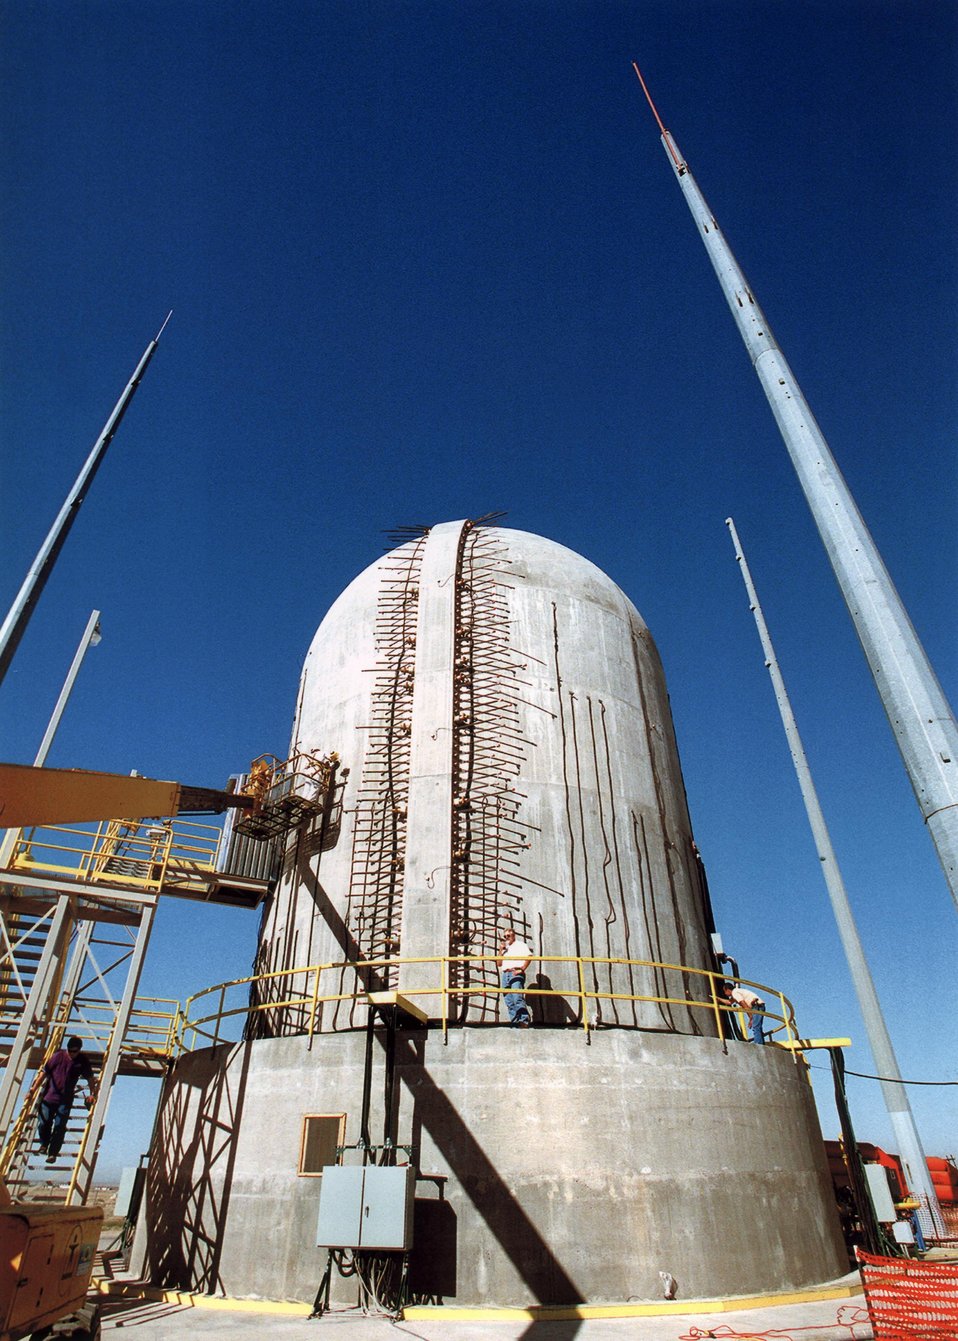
SCALE MODEL OF NUCLEAR REACTOR CONTAINMENT VESSEL BUILT FOR TESTING.

A PRESTRESSED CONCRETE CONTAINMENT VESSEL, 1/4 SCALE MODEL OF A VESSEL AT A NUCLEAR POWER PLANT IN JAPAN, WAS BUILT AT SANDIA TO BE TESTED TO FAILURE. ON 9/26/00 NITROGEN GAS WAS PUMPED INTO THE CONCRETE MODEL, GRADUALLY INCREASING THE GAS PRESSURE. AFTER 26 HOURS, WHEN THE PRESSURE INSIDE THE MODEL WAS 2.5 TIMES THE MODEL'S DESIGN PRESSURE, A LEAK WAS DETECTED. THE TEST WAS TERMINATED 6 HOURS LATER WHEN THE INTERNAL PRESSURE REACHED 3.1 TIMES THE MODEL'S DESIGN PRESSURE.